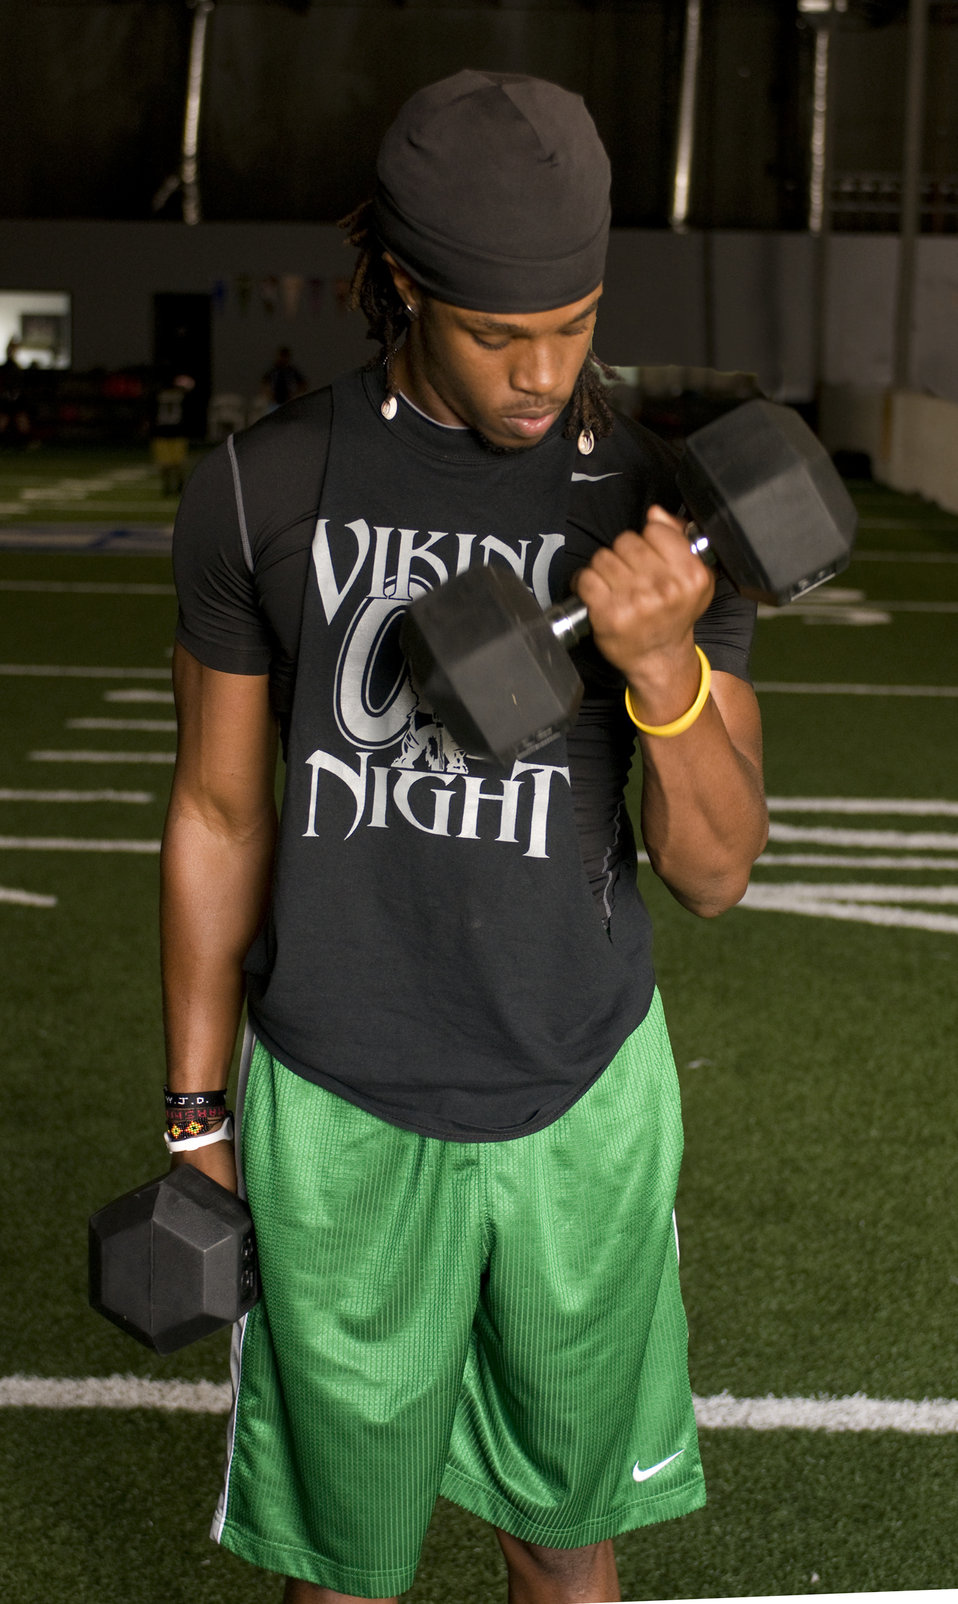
The young man pictured here was standing on an indoor practice field lifting 35lb dumbbells, one in each clenched fist. At this point of his workout, he was curling his left arm, thereby, bringing the weight up to his left upper chest by flexing his left arm at the elbow. His right arm was hanging straight down at his right side, and when he'd completed the left arm curl, he would perform the same activity on the right side as well. Hopefully, he was keeping well hydrated during his exercise regimen by drinking fresh water during his workout.